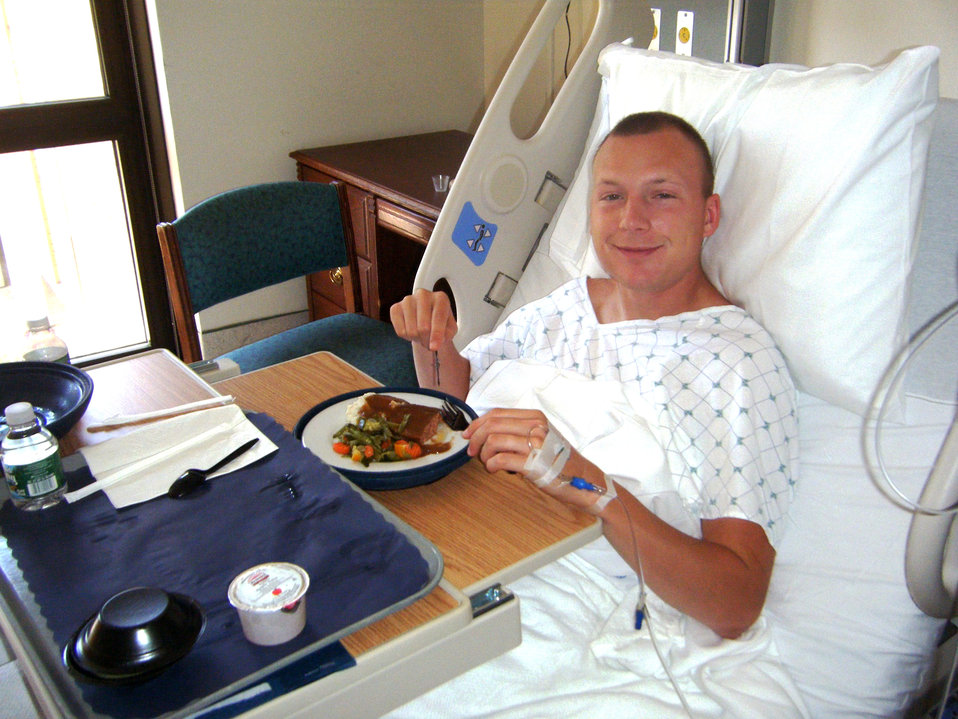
Airman answers unusual call

Only a few hours after donating bone marrow to a critical patient, Staff Sgt. Charles F. Newberry recovers Aug. 11, 2010, in his Washington D.C. hospital room. Sergeant Newberry said his recovery was fast, and he was walking around the day after his surgery.